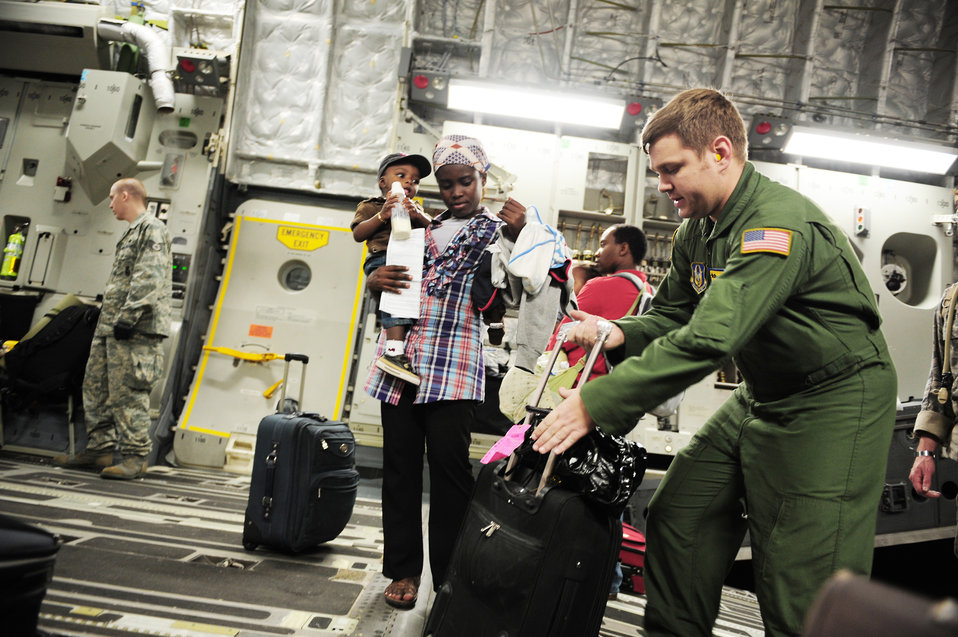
Haiti Earthquake Relief

Tech Sgt. Andrew Lucas (left) assists Haitian-Americans Jan. 18, 2010 at Toussaint L'Ouverture International Airport in Port-au-Prince, Haiti. Sergeant Lucas is a loadmaster assigned to the 729th Airlift Squadron at March Air Reserve Base, Calif.